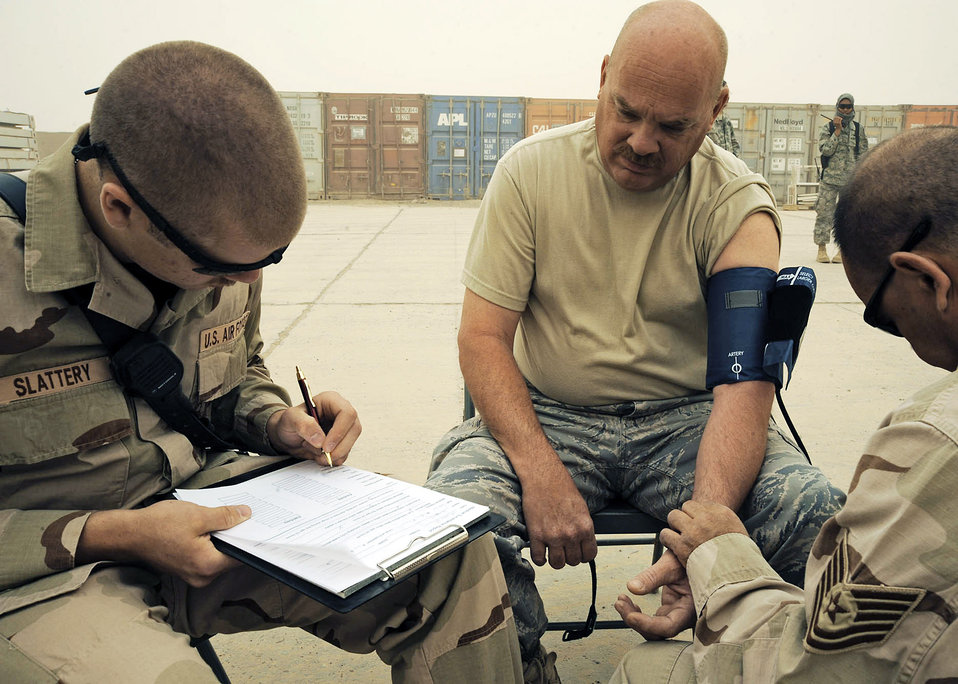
Inspecting the mail

Senior Airman Matthew Slattery (left) and Tech. Sgt. Peter Mickiewicz (right) take Tech. Sgt. Steve Gaunt's blood pressure and vitals to make sure he can perform inspection duties in his chemical gear at Camp Stryker, Iraq. Mail that has improper labeling has to be inspected by a team of Airmen from emergency management. Airman Slattery and Sergeant Mickiewicz are deployed from the New Hampshire Air National Guard's 157th Air Refueling Wing. Sergeant Gaunt is deployed from the Alabama Air National Guard's 117th Air Refueling Wing. All Airmen are assigned to the 447th Expeditionary Civil Engineer Squadron.